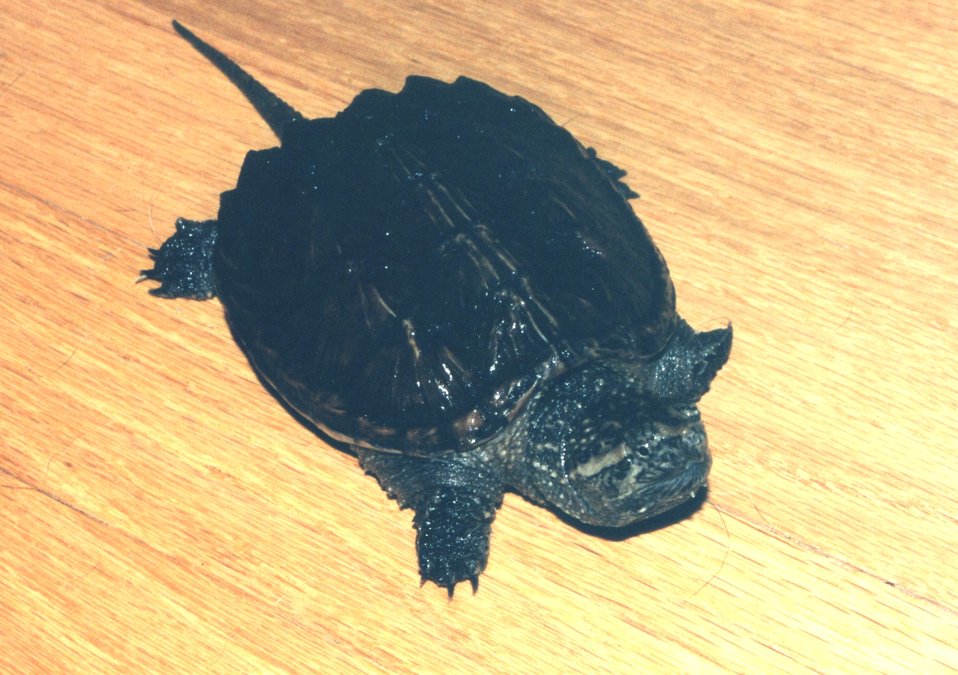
A year-old snapping turtle.